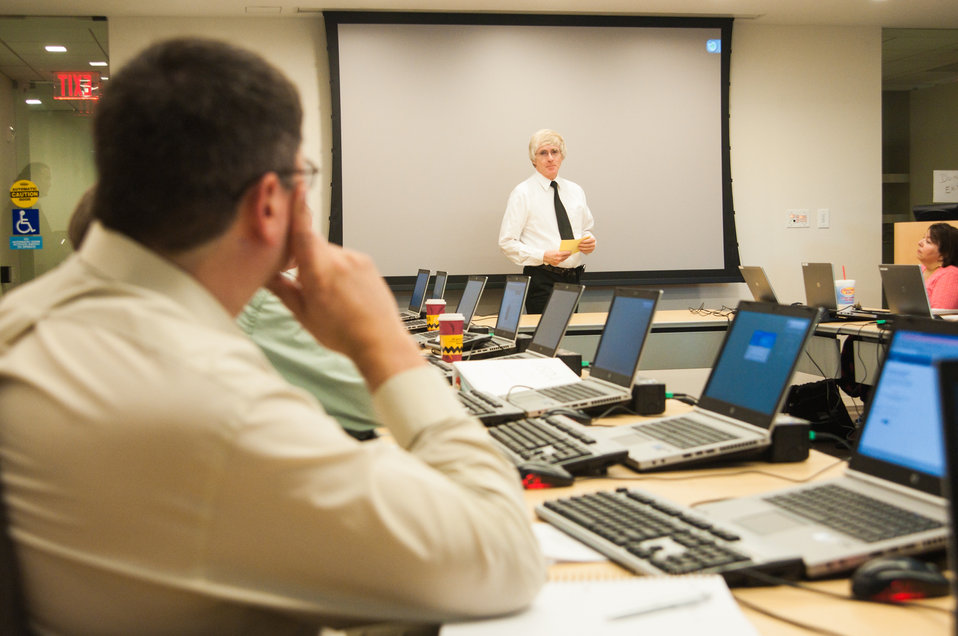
U.S. Department of Agriculture (USDA) National Institute of Food and Agriculture (NIFA) Strategic Tribal College Competitive Grant Programs Program Leader Tim Grosser focuses on the over 100 competitive grant programs available to Tribal Colleges and University’s and the work performed with NIFA Endowment Grants at the USDA 2013 Land-Grant Development Tribal Fellows Program held in Washington, D.C. on Monday, Jun.03, 2013.